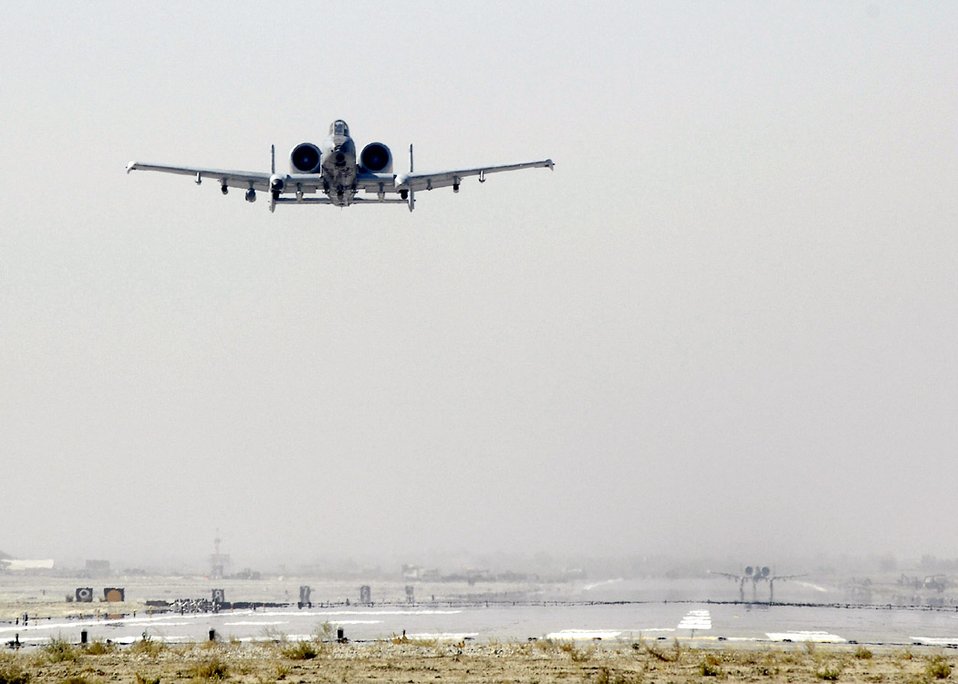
Jan. 1 airpower summary: A-10 Thunderbolt II delivers

An A-10 Thunderbolt II takes off from Bagram Airfield, to fly a combat sortie in support of Operation Enduring Freedom. The A-10 has excellent maneuverability at low air speeds and altitude, and is a highly accurate weapons-delivery platforms.